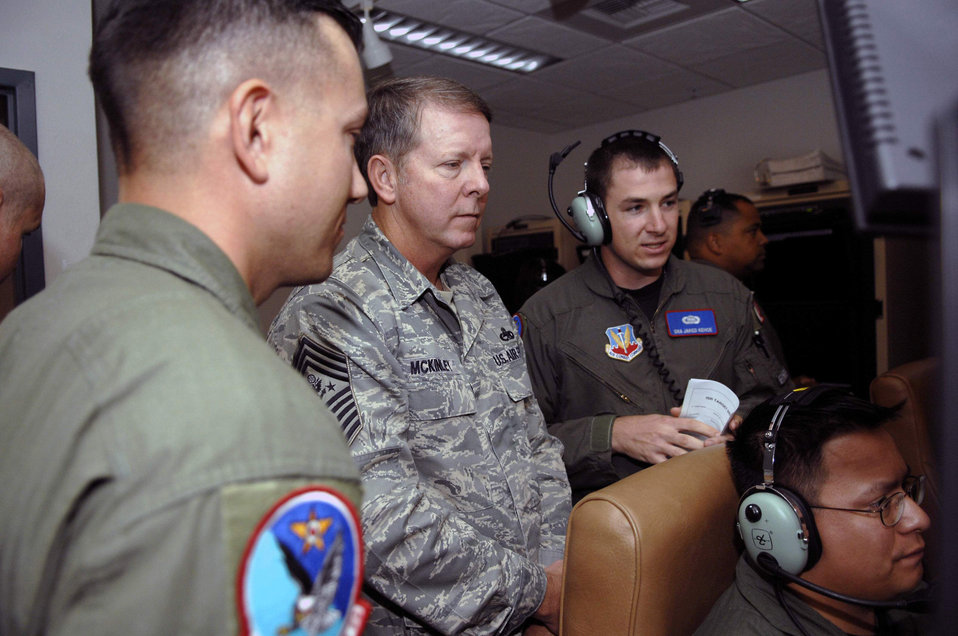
Top enlisted Airman visits Creech Airmen

Master Sgt. Chris Vanderbilt (left) Senior Airman Jared Kehoe (right) and Staff Sgt. Bobby Vivar (seated) show Chief Master Sgt. of the Air Force Rodney J. McKinley MQ-1 Predator training operations Oct. 7 at Creech Air Force Base, Nev. Sergeant Vanderbilt is the 11th Reconnaissance Squadron operations superintendent, Airman Kehoe is an 11th RS sensor operator instructor, and Sergeant Vivar is a 11th RS sensor operator student.